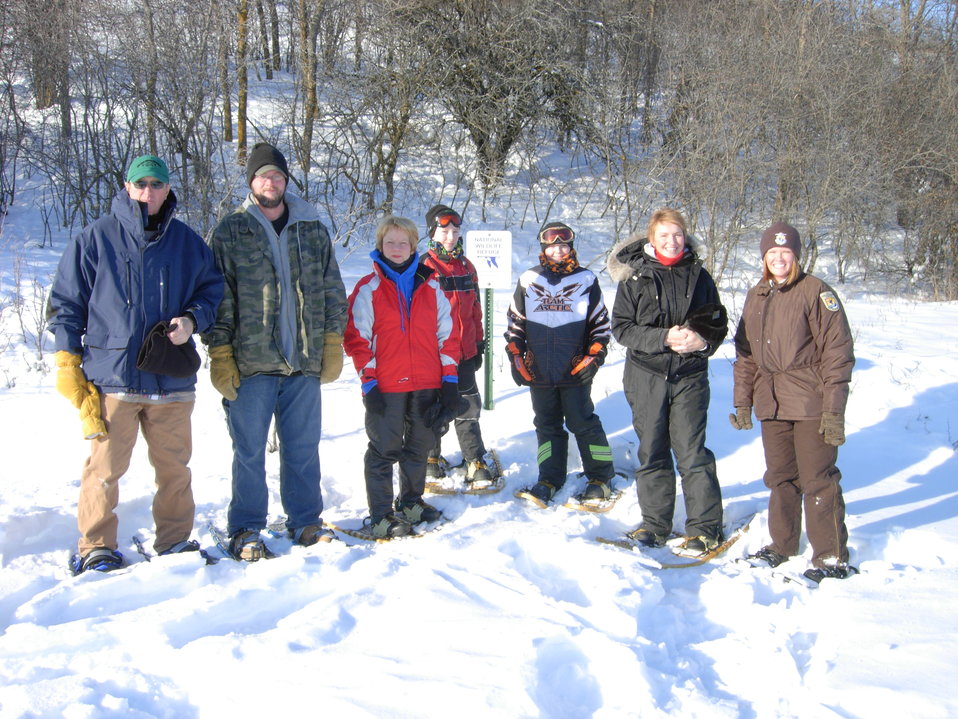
Morning Snowshoers

One of the snowshoeing groups during the morning session:
From Left to Right: Dave and Justin McDermott, Minot
Joyce Solberg, Minot, Dalton, Dakota and Melissa Peterson, Kenmare, Jennifer Jewett, Des Lacs NWR